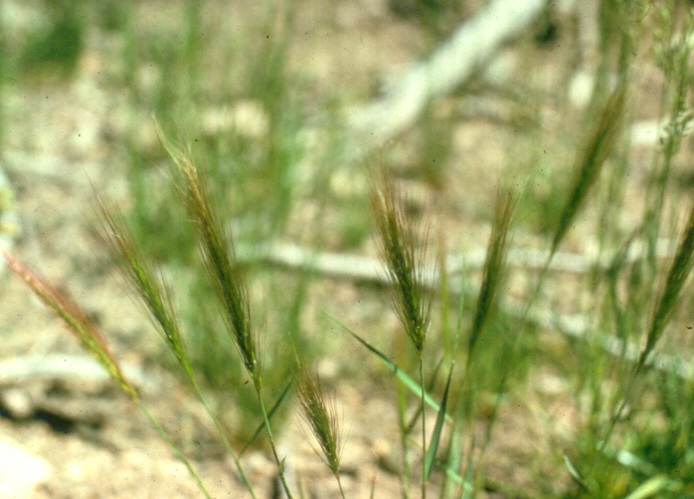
Squirreltail Salmon FIeld Office UCSC Upper Columbia Salmon Clearwater District